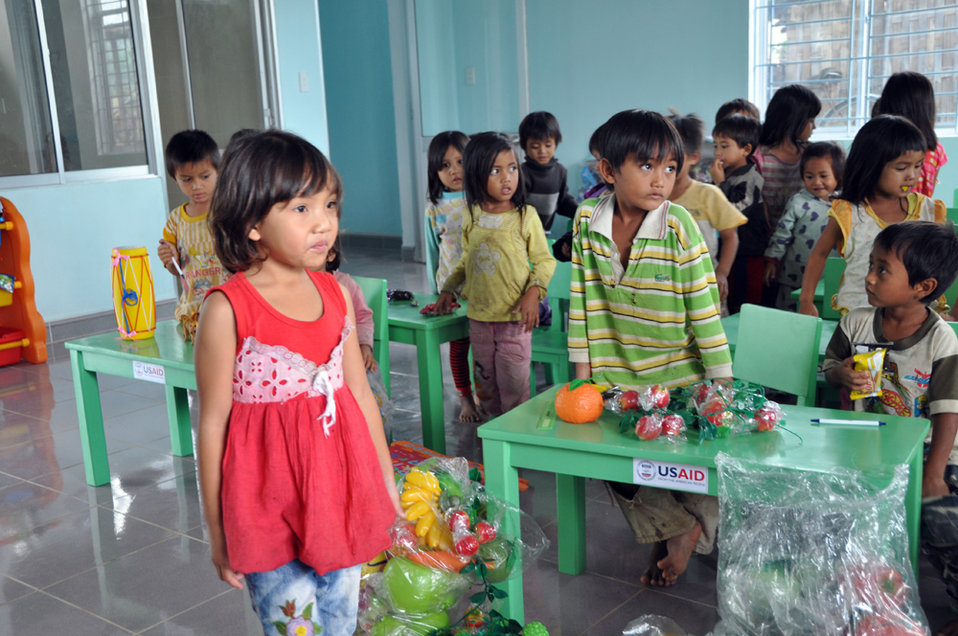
USAID contributes to refurbished pre-schools and teacher training in Vietnam